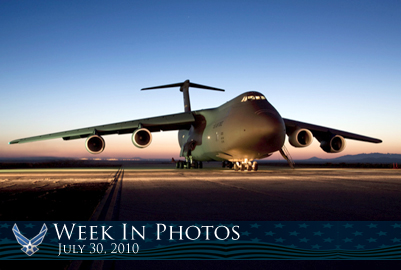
Air Force Week in Photos for July 30, 2010, highlights photos from around the Air Force. In this courtesy photo from Lockheed Martin, a C-5M sits on the flightline at Dover Air Force Base, Del. The Super Galaxy boasts upgraded engines and avionics, enhanced communications, navigation and safety systems, and improved reliability rates.